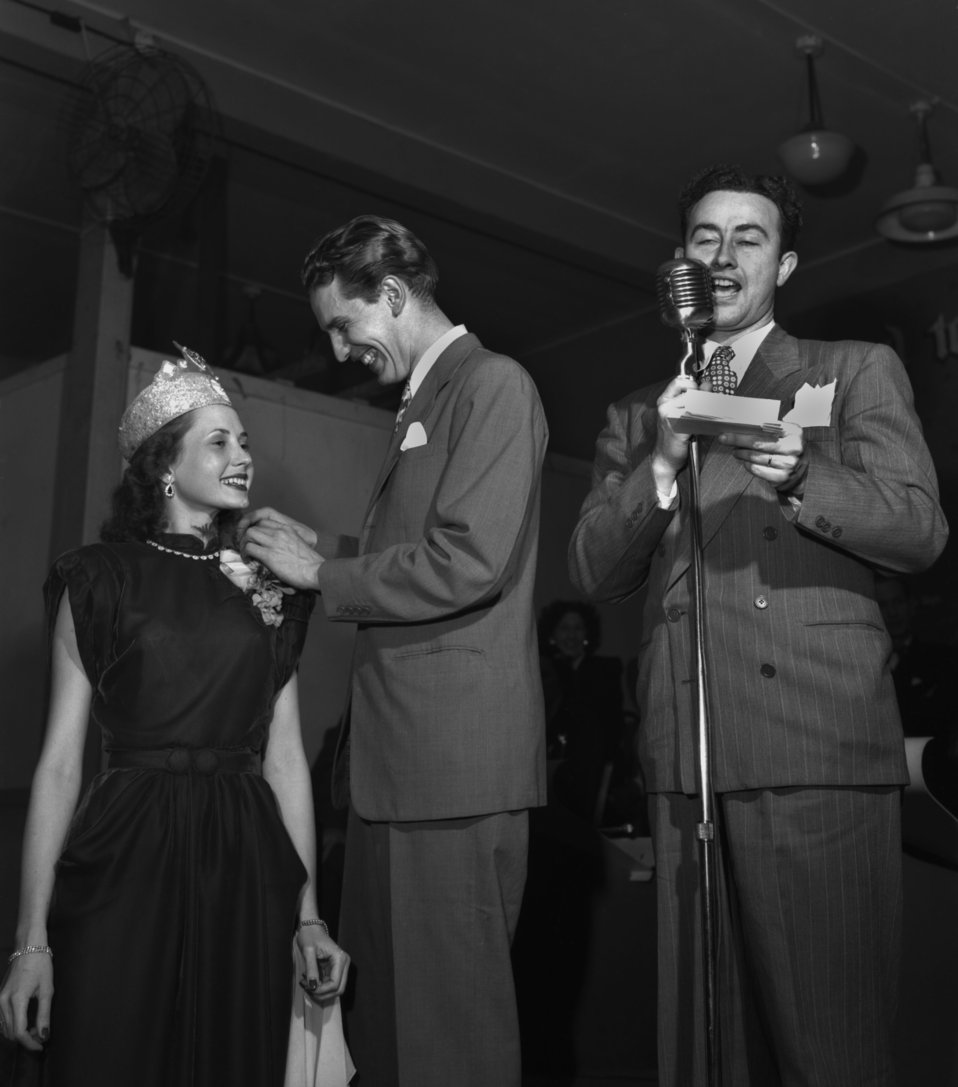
Miss Oak Ridge

4166-4 DOE photo by Ed Westcott
Oak Ridge 12-26-1947